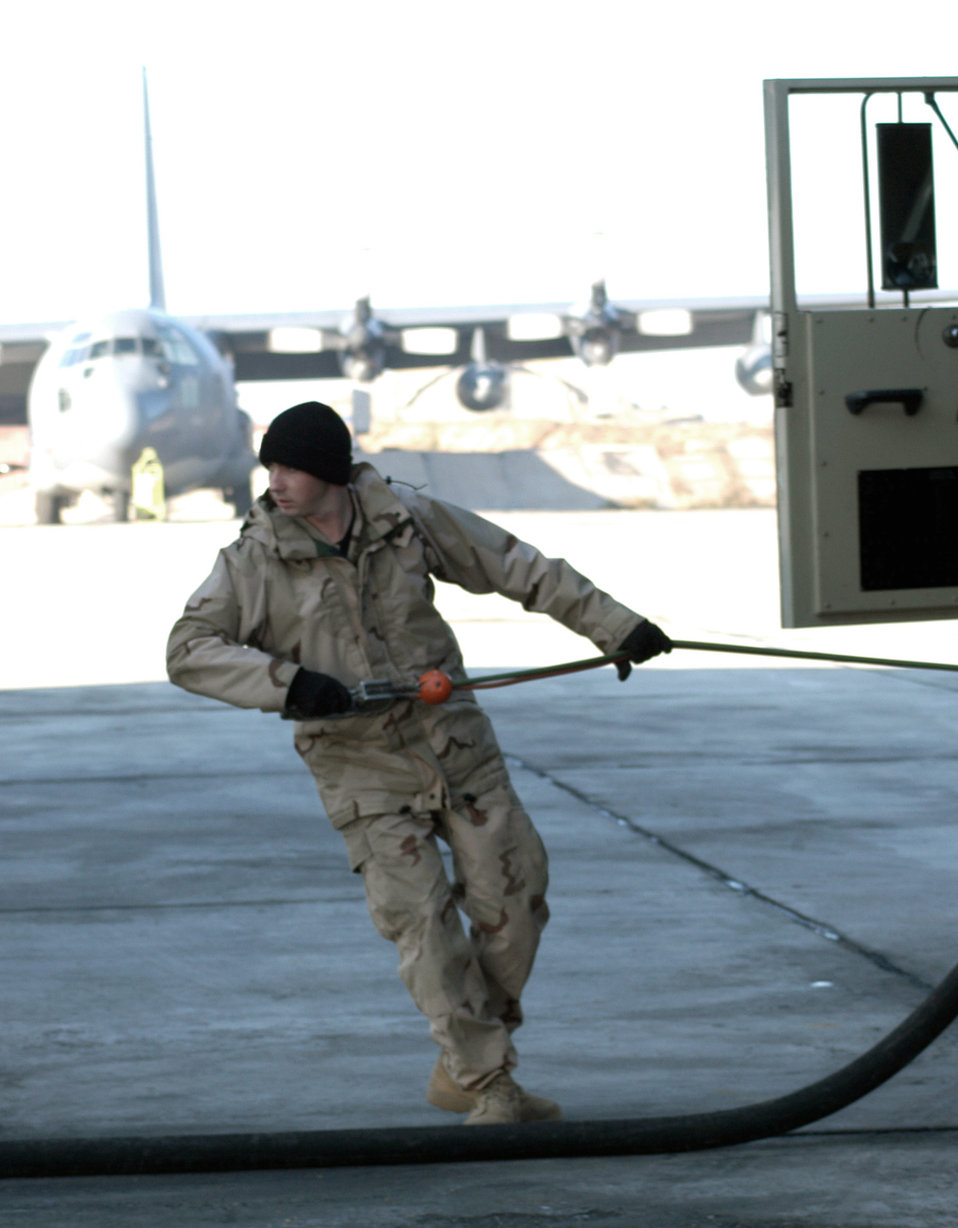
Deployed fuels technicians keep OEF airlift rolling

KARSHI-KHANABAD AIR BASE, Uzbekistan -- Airman 1st Class Derrick Dillon works at his fuel truck during the fueling of a C-17 Globemaster III here Jan. 19. He is a fuels distribution journeyman deployed from Charleston Air Force Base, S.C., to the 416th Expeditionary Mission Support Squadron fuels management flight here.